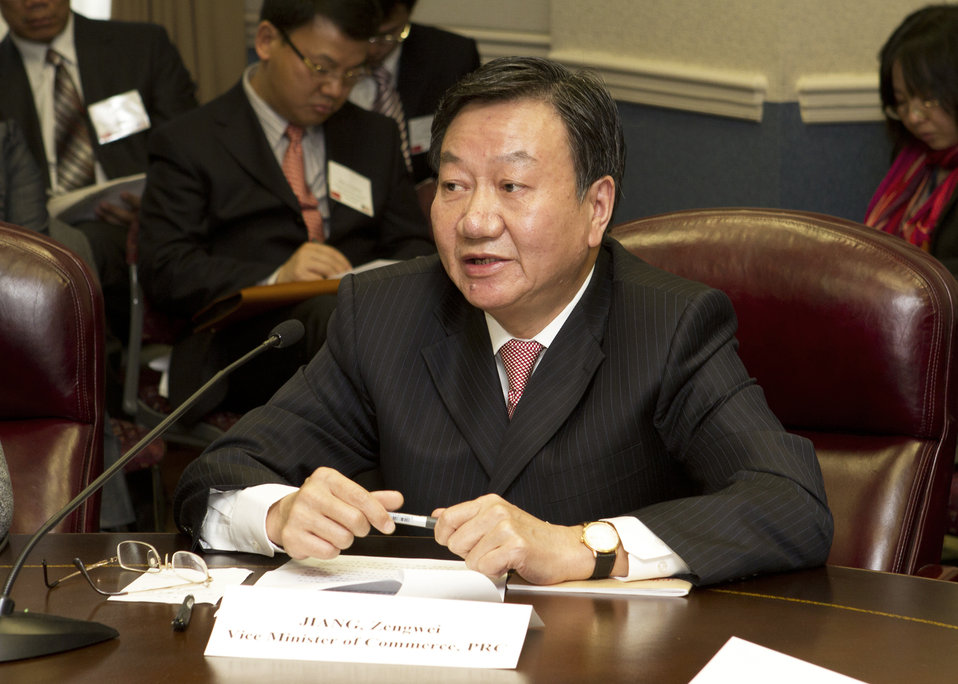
People’s Republic of China Vice Minister of Commerce Jaing Zengwei speaks at a signing agreement held at the U.S. Department of Agriculture in Washington, D.C., on November 22, 2010. The agreement is with a Chinese buying delegation and the U.S. soybean industry, indicating that the Chinese intend to purchase up to eight million metric tons of U.S. soybeans, valued at $3 billion. USDA photo 10di1559-727